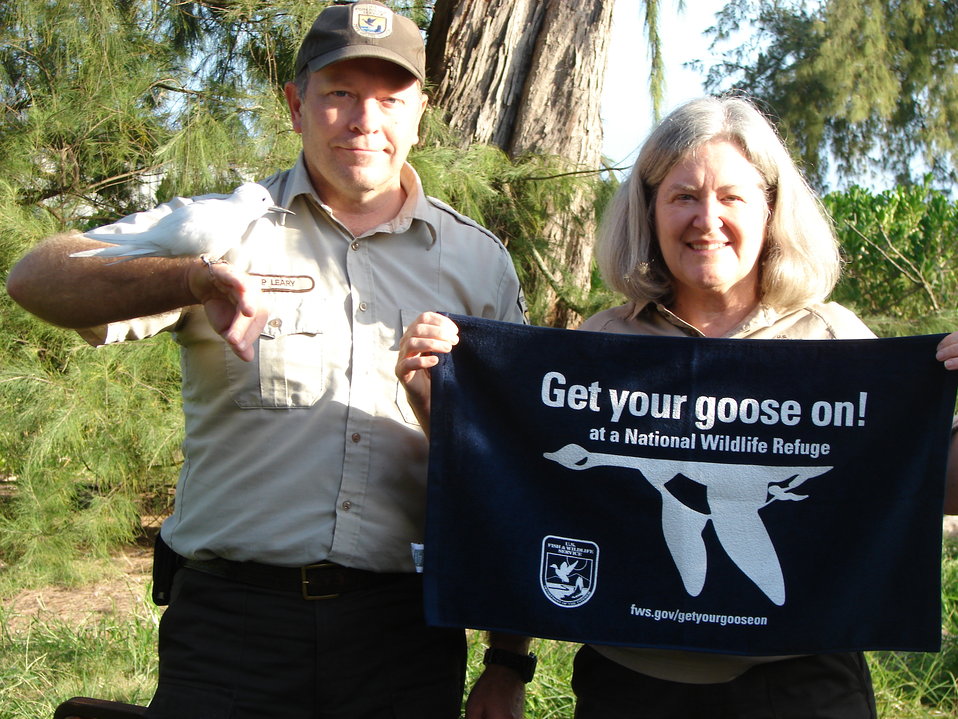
Get Your Goose On! - Pacific Atoll Style!

Midway Atoll National Wildlife Refuge staff take a break from feeding abandoned fledging white terns to Get Their Goose On!